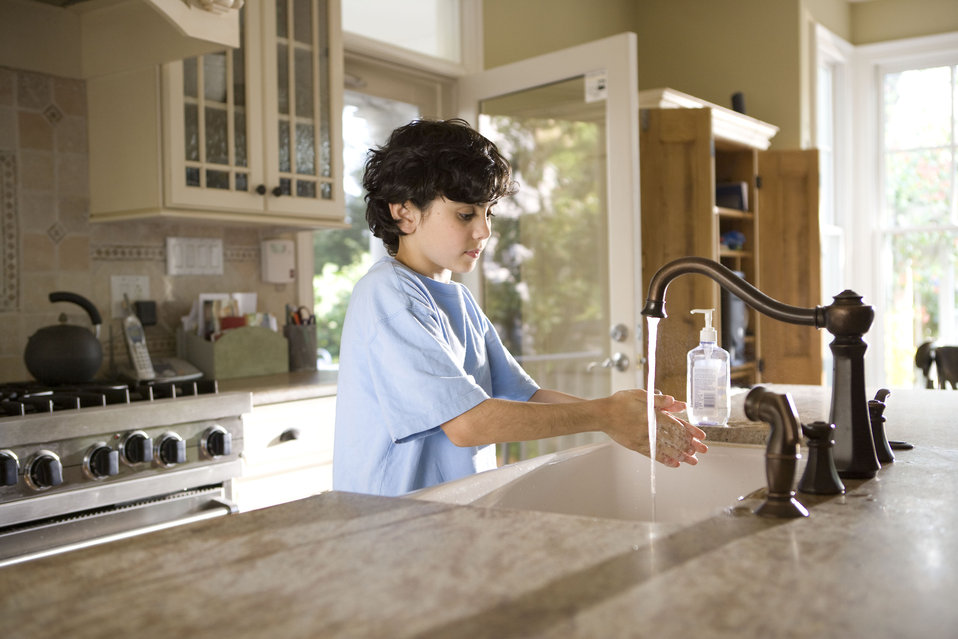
This young boy was shown in the process of properly washing his hands at his kitchen sink, briskly rubbing his soapy hands together under fresh running tap water, in order to remove germs, and contaminants, thereby, reducing the spread of pathogens, and his ingestion of environmental chemicals or toxins. Children are taught to recite the Happy Birthday song, during hand washing, allotting enough time to completely clean their hands.